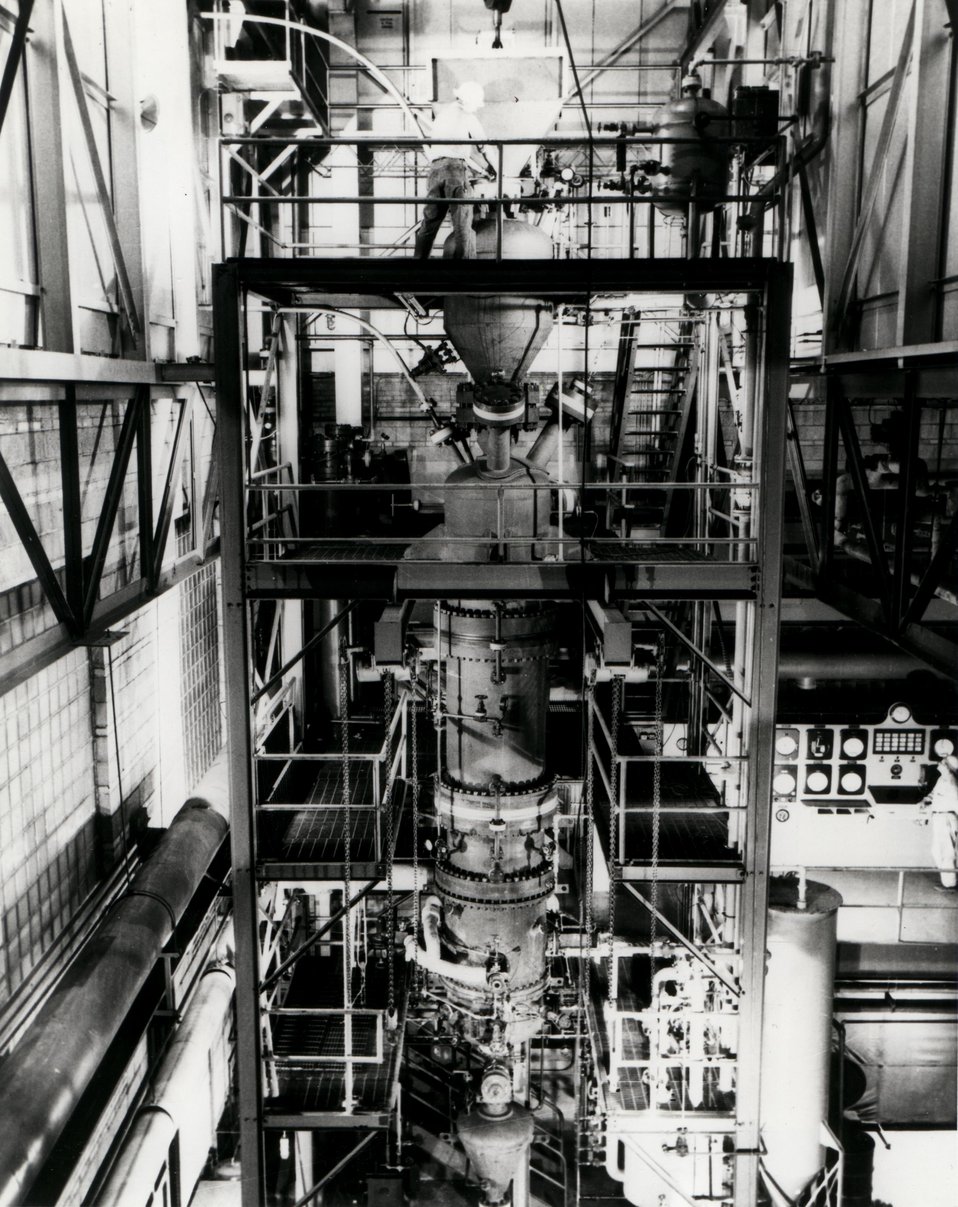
An interior view of the 25 ton per day fixed-bed coal gasification pilot plant at the U.S. Department of Energy's Grand Forks Energy Research Center in North Dakota. Circa 1976.